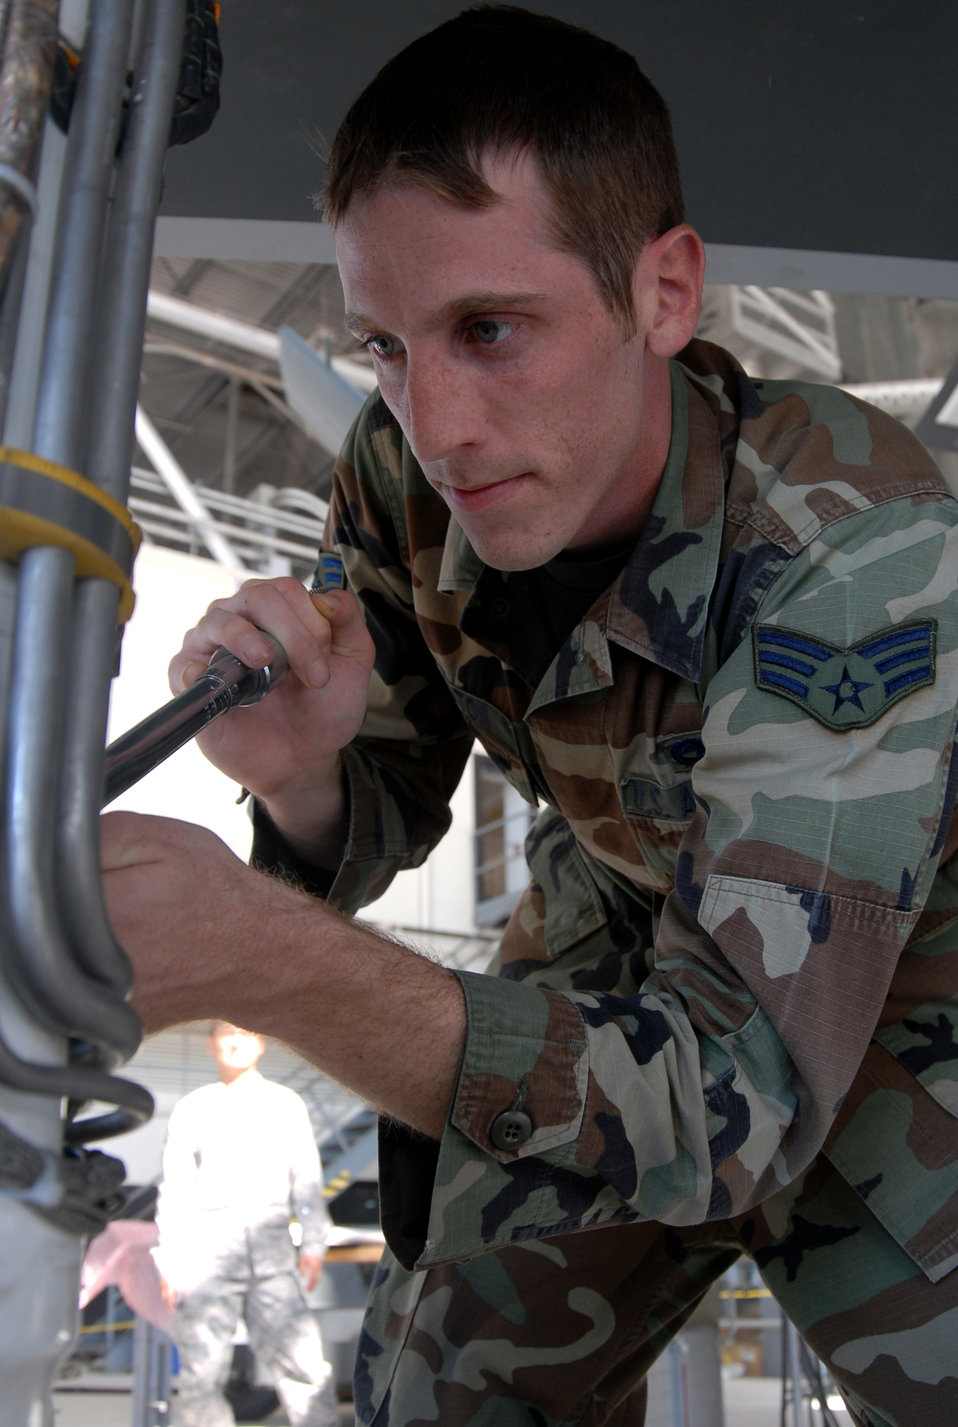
Edwards test squadron test drives Global Hawk

Senior Airman Cody Melton performs maintenance on a Global Hawk Oct. 24 at Edwards Air Force Base, Calif. Airman Melton is a 31st Test and Evaluation Squadron avionics specialist.